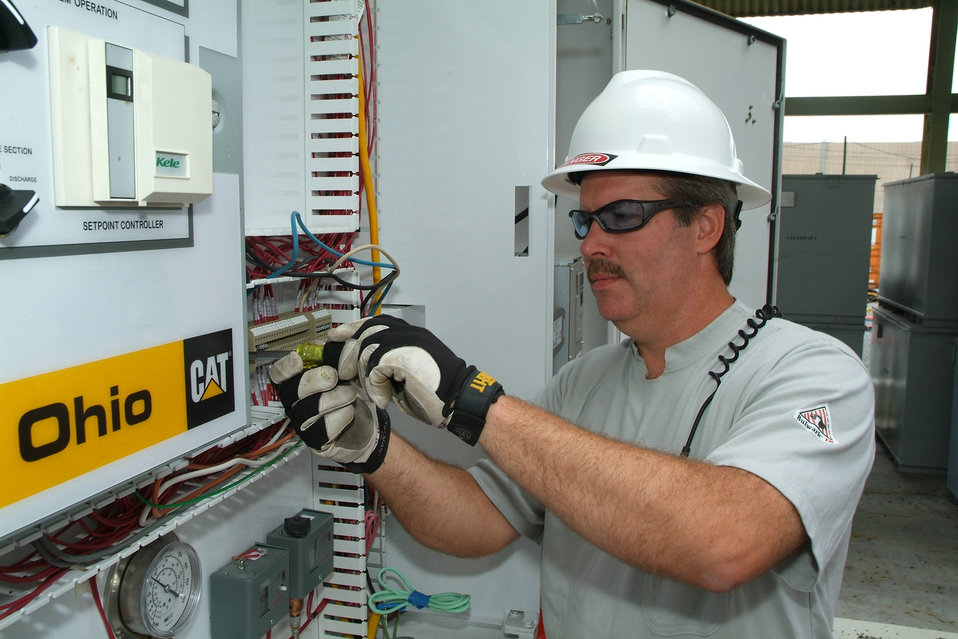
Steve McCarty

At Paducah, Steve McCarty found immediate opportunities in a contractor’s organization, and soon began work on a project funded by the Recovery Act.